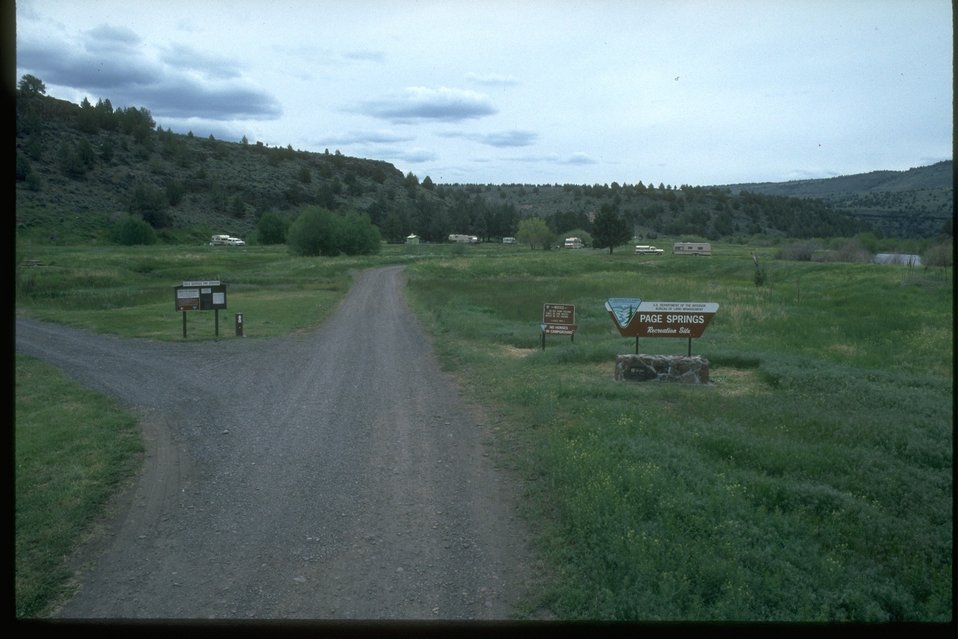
The BLM Page Springs Campground.